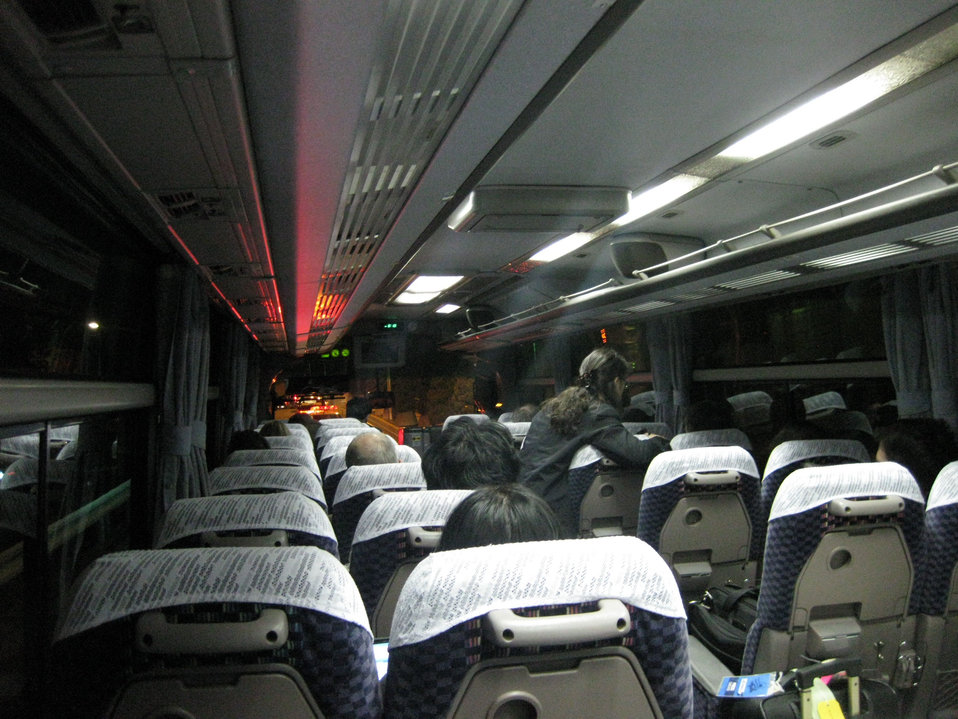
Press Bus in Tokyo

Aboard the press bus from Haneda airport to the hotel in Tokyo, Japan during U.S. Secretary of State Hillary Clinton's travel to Asia February 16, 2009.